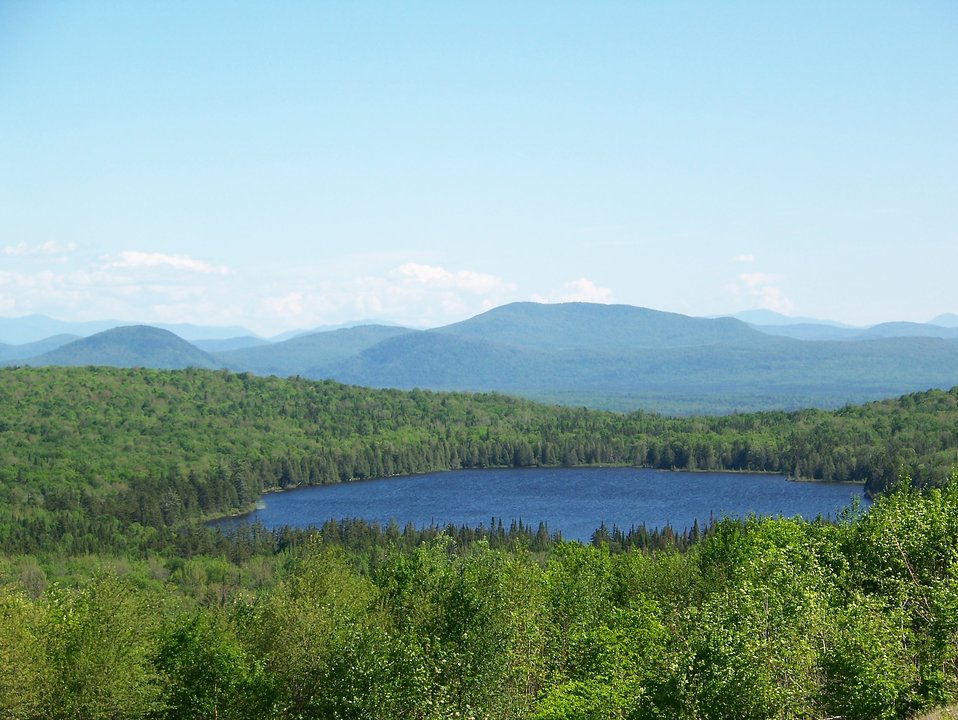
Lewis Pond

Nulhegan Basin Division, Silvio O. Conte National Wildlife Refuge.